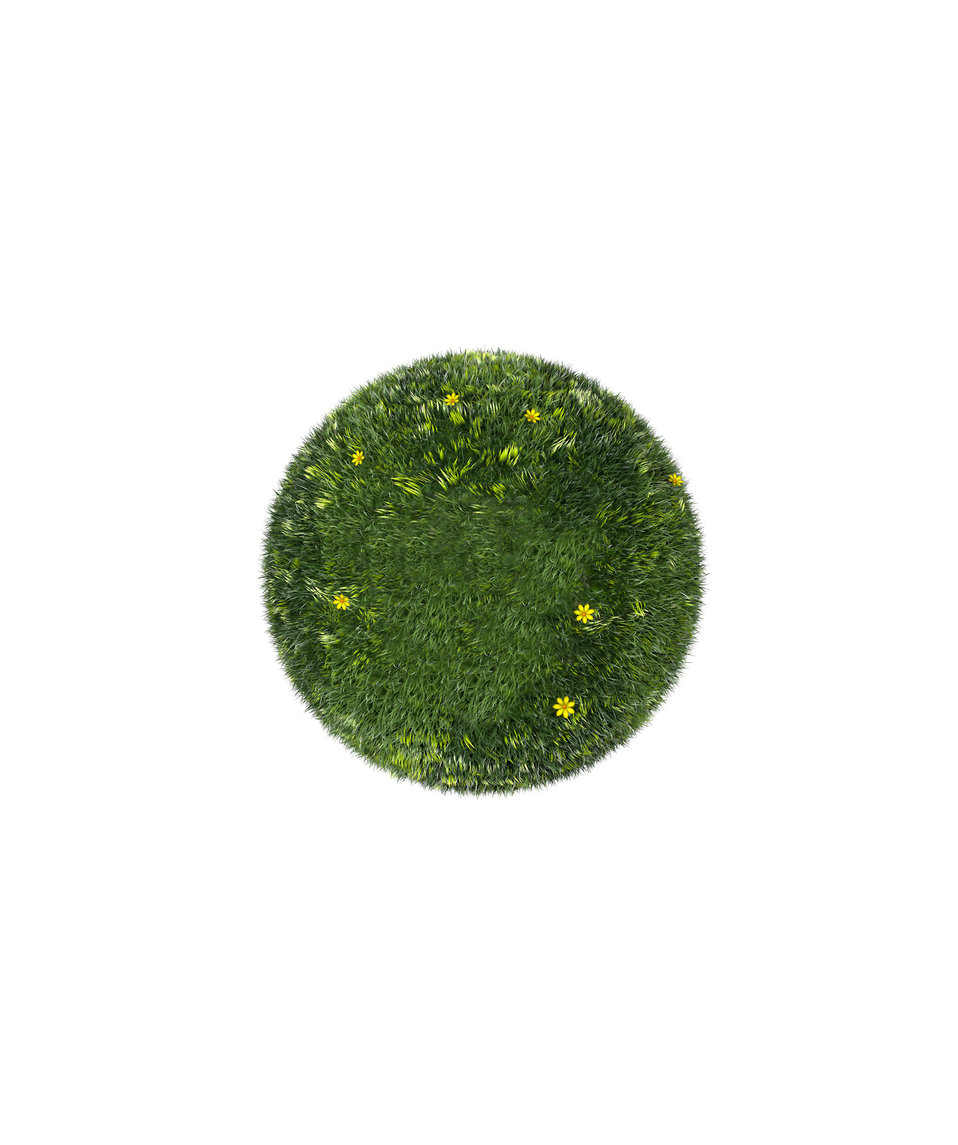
Green world

Green ball of grass on white background.